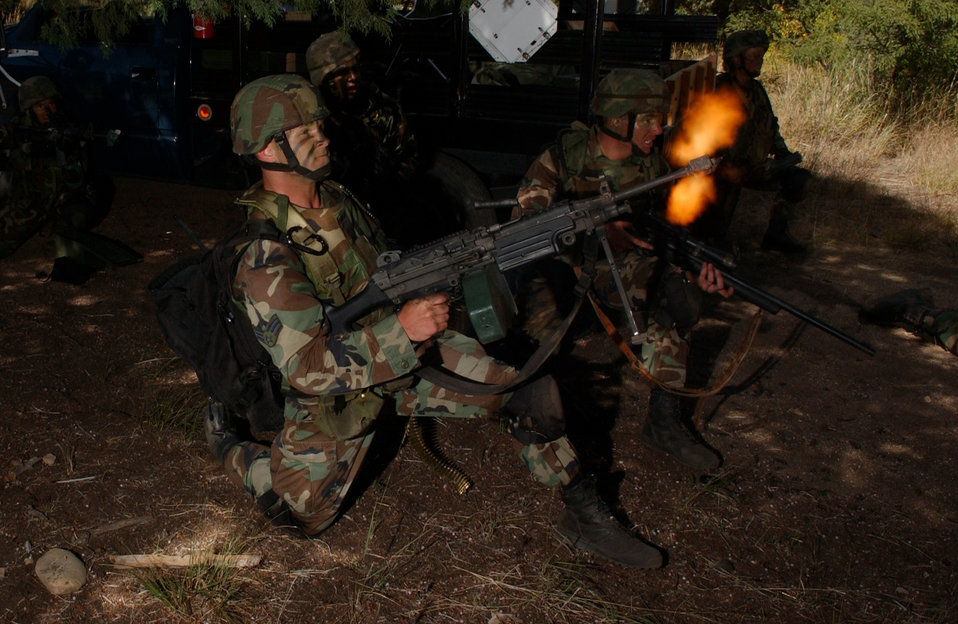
Defender Challenge 2004

FORT HUACHUCA, Ariz. -- Senior Airman Chris Clawson sets up a base of fire after contact with enemy forces during a tactics training exercise here recently. Members of the U.S. Air Forces in Europe Defender Challenge team are spending three weeks here in preparation for the 2004 Defender Challenge competition. Defender Challenge held at Lackland Air Force Base, Texas, is a security forces competition pitting competitors from major commands against one another. Airman Clawson is assigned to the 39th Security Forces Squadron at Incirlik Air Base, Turkey.